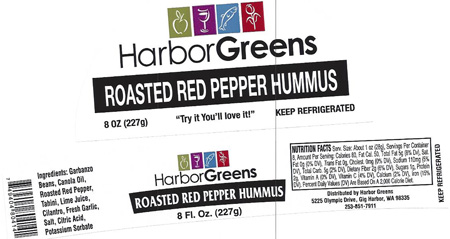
RECALLED – Hummus

July 16, 2013 – Product Recall – Hagee Foods Inc. dba Penny's Salsa Inc. Recalls Hummus Products Because of Possible Health Risk.